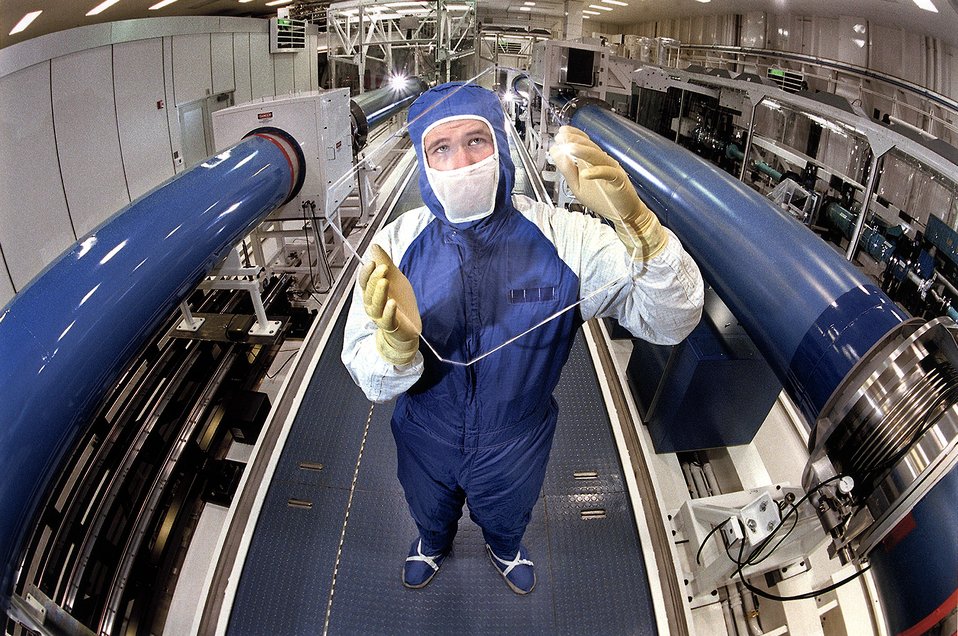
SNL TECHNOLOGIST EXAMINES THE DEBRIS SHIELD AT THE GIANT Z-BEAMLET, THE THIRD LARGEST LASER ON EARTH.

THE DEBRIS SHIELD PROTECTS THE Z-BEAMLET LASER'S FINAL FOCUSING LENS FROM FLYING DEBRIS WHEN THE Z ACCELERATOR FIRES. IN ITS FIRST TRY AS A SNL DIAGNOSTICS TOOL, THE Z BEAMLET, CONFIRMED THAT SANDIA'S Z MACHINE, THE MOST POWERFUL LABORATORY PRODUCER OF X-RAYS IN THE WORLD, SPHERICALLY COMPRESSED A SIMULATED FUSION PELLET DURING A FIRING OF THE GIANT ACCELERATOR. THE BEAMLET LASER WAS FIRST BUILT BY LAWRENCE LIVERMORE NATIONAL LAB TO SERVE AS THE SCIENTIFIC PROTOTYPE OF THE NATIONAL IGNITION FACILITY. WHEN THE LASER WAS REMOVED FROM LLNL IT WAS REASSEMBLED AT SNL.